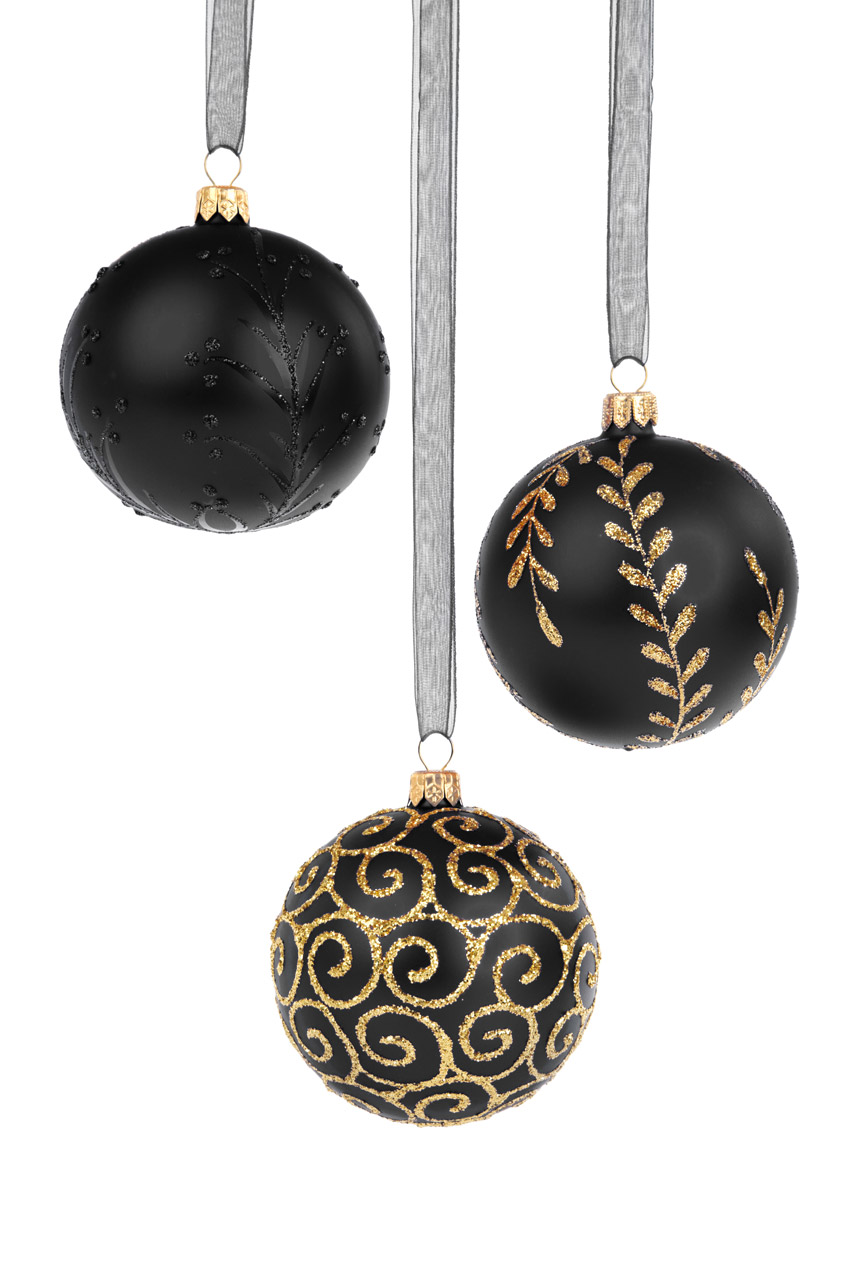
Black christmas baubles

Three black christmas baubles hanging isolated on white background.